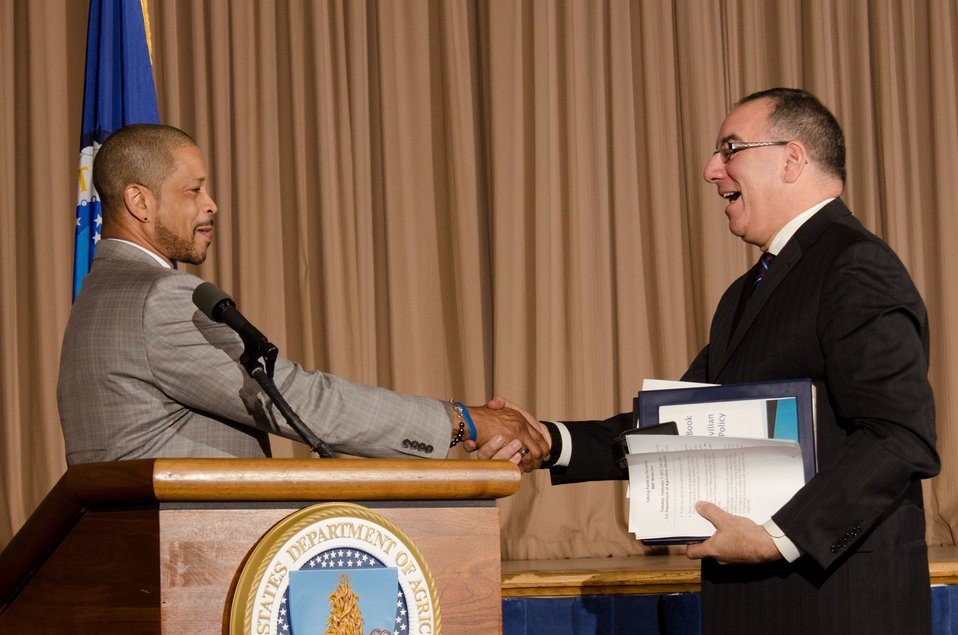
United States Department of Agriculture (USDA) Departmental Management Office of Human Resources Management Deputy Director William P. Milton, Jr. (left), welcomes United States Department of Defense Civilian Personal Policy and Chief of Human Capital Officer Pasquale Tamburrino, Jr. (right), to the podium during the Work Force Recruitment Program’s (WRP) “Your Key To Hiring Student Interns and Employees with Disabilities” event hosted by the United States Department of Agriculture (USDA) in the Jefferson Auditorium, Washington, D.C. on Tuesday, February 7, 2012.